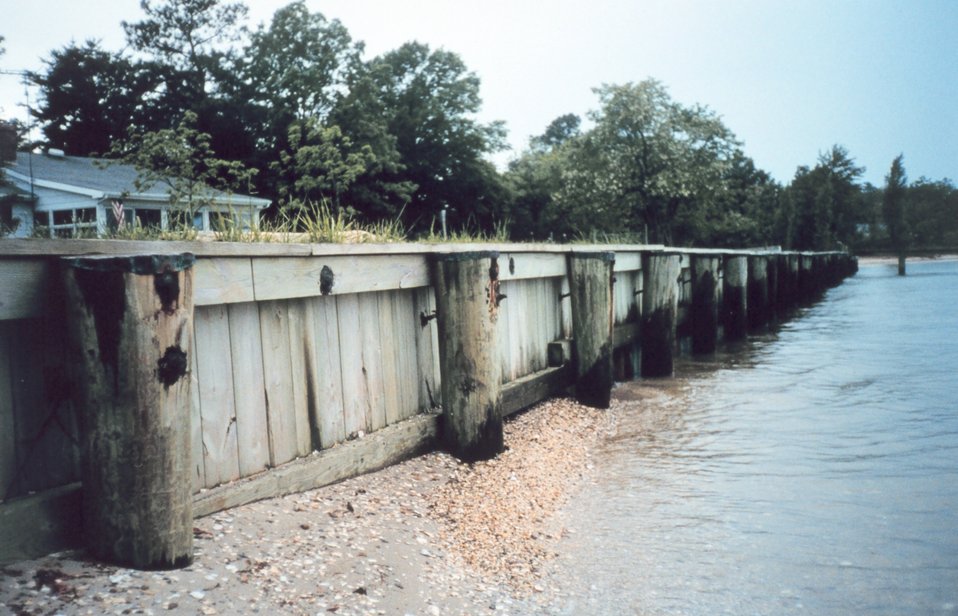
A breakwater constructed to stop erosion